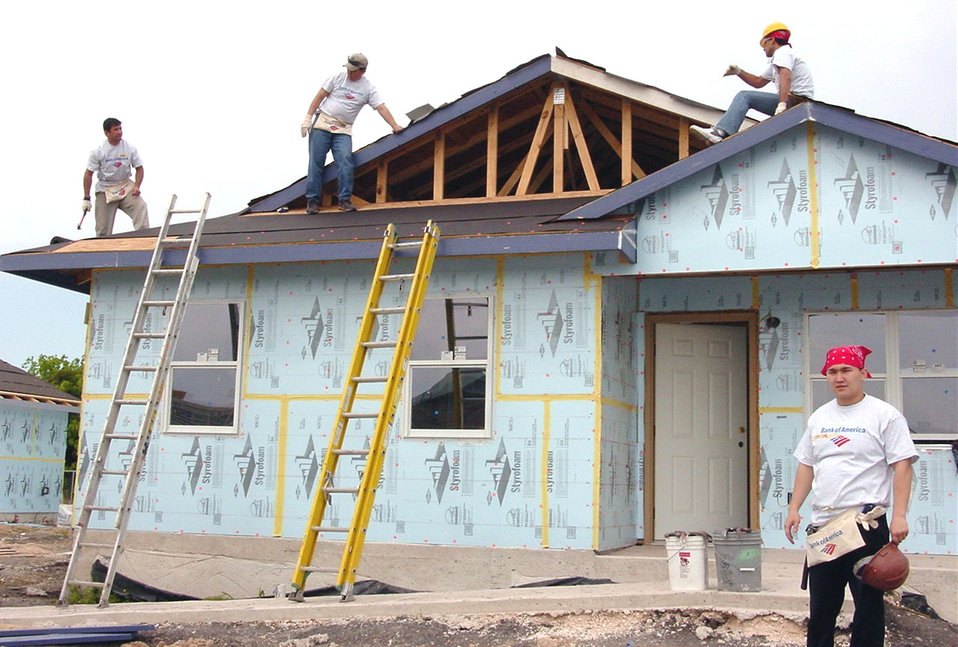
DLI builds

LACKLAND AIR FORCE BASE, Texas -- International military students from the Defense Language Institute English Language Center here volunteered to work on a Habitat for Humanity house construction project. Thirty-six students from 20 countries set aside their bookwork to participate in the project.